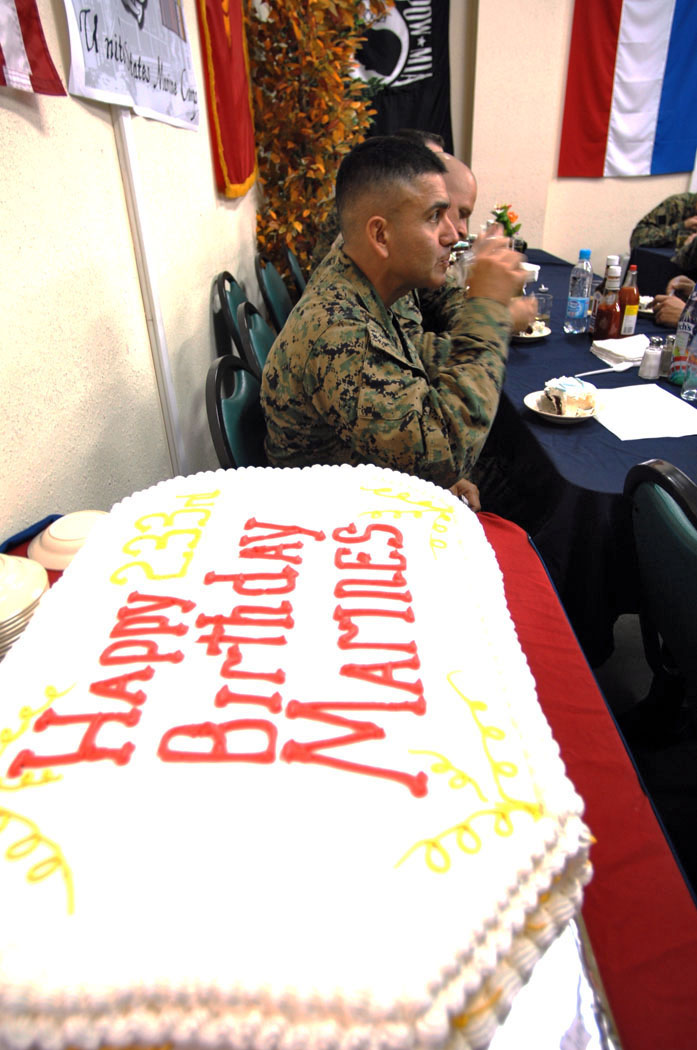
Marines celebrate Marine Corps' 233rd birthday at Manas

Marine Master Sgt. Pete Delarosa enjoys some food at the Ala Too Dining Facility during a celebration of the Marine Corps' 233rd birthday at Manas Air Base, Kyrgyzstan, Nov. 10. The group of 30 Marines deployed from the 3rd Marine Division, Okinawa, are en route to support Operation Enduring Freedom.